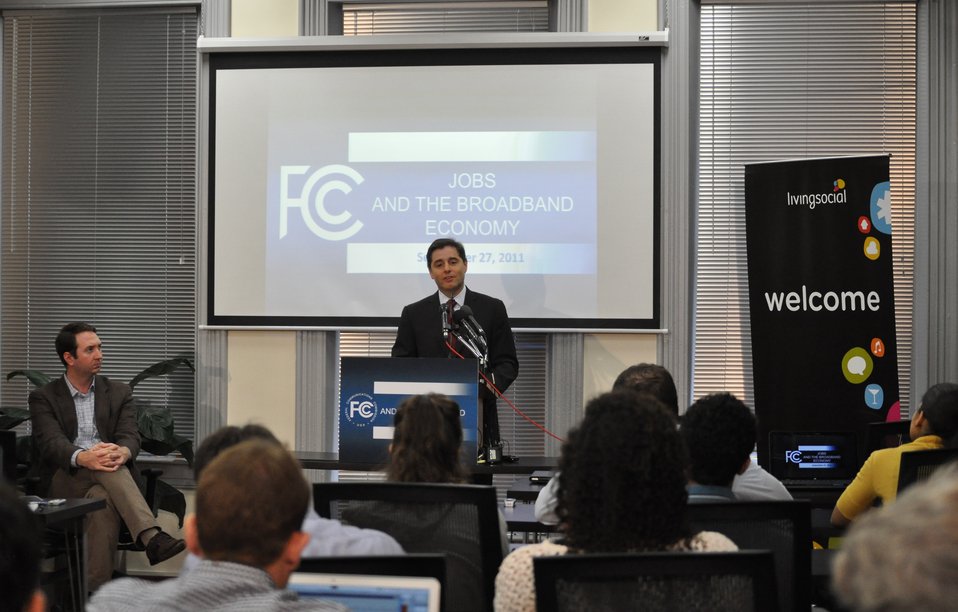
Jobs and the Broadband Economy

FCC Chairman Genachowski